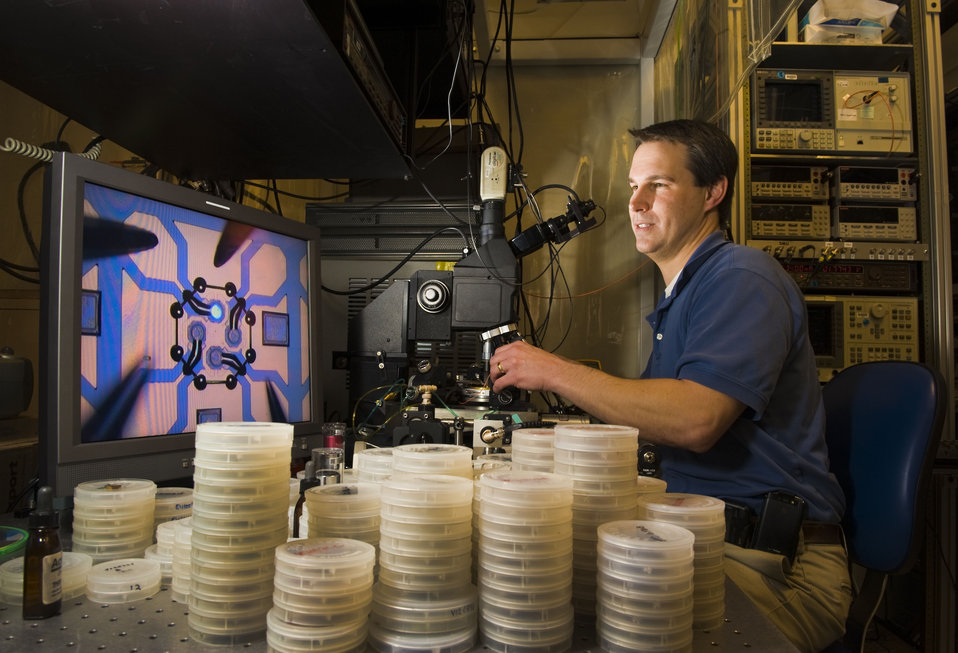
Sandia researchers measures the wavelength of a tiny laser called a VCSEL, or vertical-cavity surface emitting laser.
The image on the monitor (left) shows a bright circle of light emitted from a VCSEL operating at the wavelength of 894 nanometers needed to drive the atomic clock. A matchbook-sized atomic clock 100 times smaller than its commercial predecessors has been created by a team of researchers at Symmetricom Inc. Draper Laboratory and Sandia National Laboratory. The portable chip scale atomic clock (CSAC) -only about 1.5 inches on a side and less than a half-inch in depth-also requires 100 times less power than its predecessors. Instead of 10 watts, it uses only 100 mill watts.